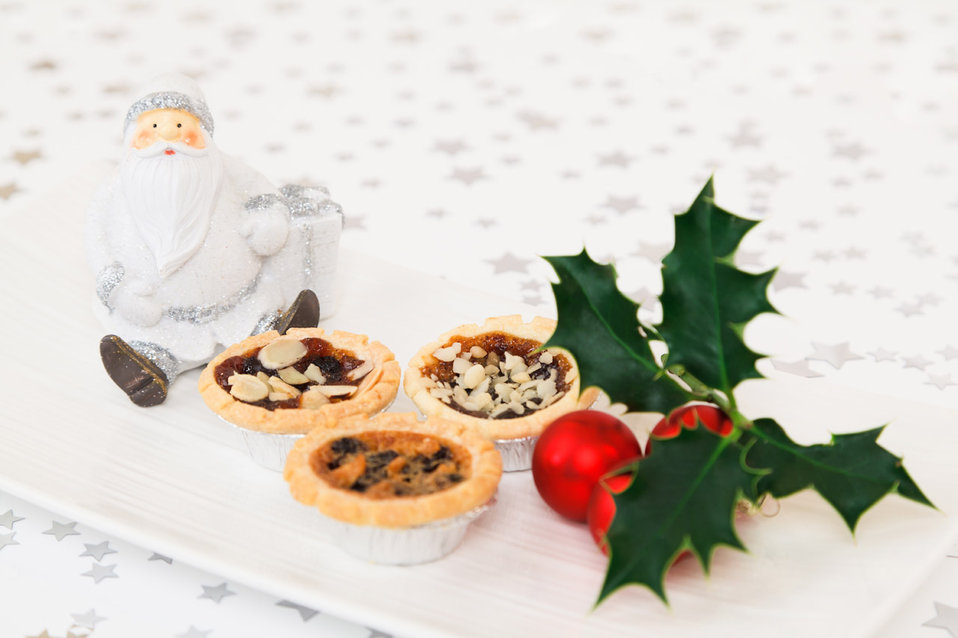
Santa claus decoration with mince pies and holly on plate with starry background.